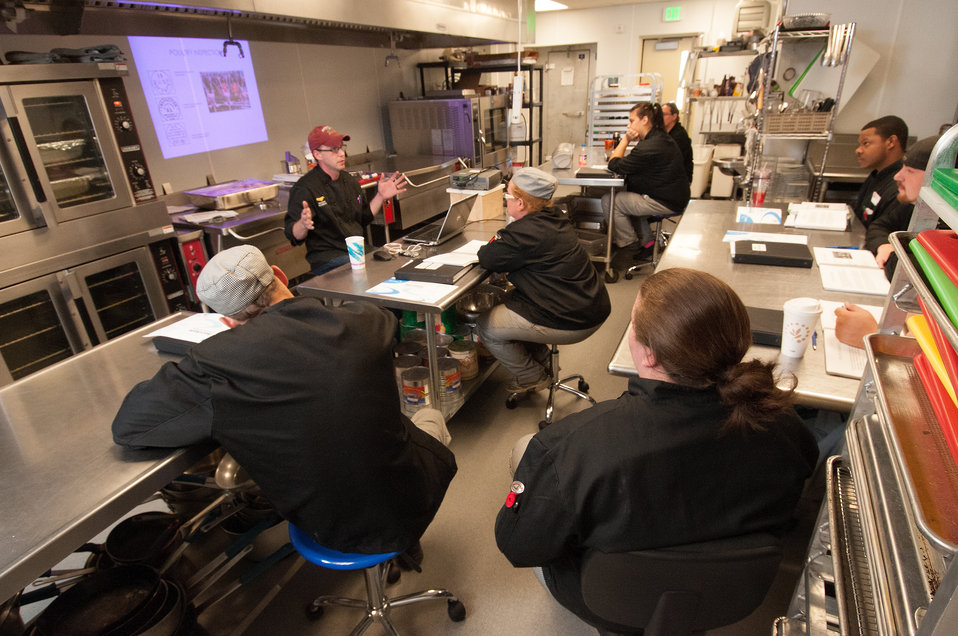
Chef Byron David Moyer explains the U.S. Department of Agriculture (USDA) poultry inspection stamps to students in the Vermont Food Bank co-located job-training kitchen at the Central Vermont Community Action Council. The program provides nutrition and food preparation skills that can lead to employment opportunities. The mission of the CVCAC is to create economic security for low to moderate-income residents in rural Central Vermont. Through the assistance of a USDA Rural Development (RD) Community Facilities (CF) Grant the CVCAC was able to consolidate their services in downtown Barre, VT on Sep. 17, 2013.